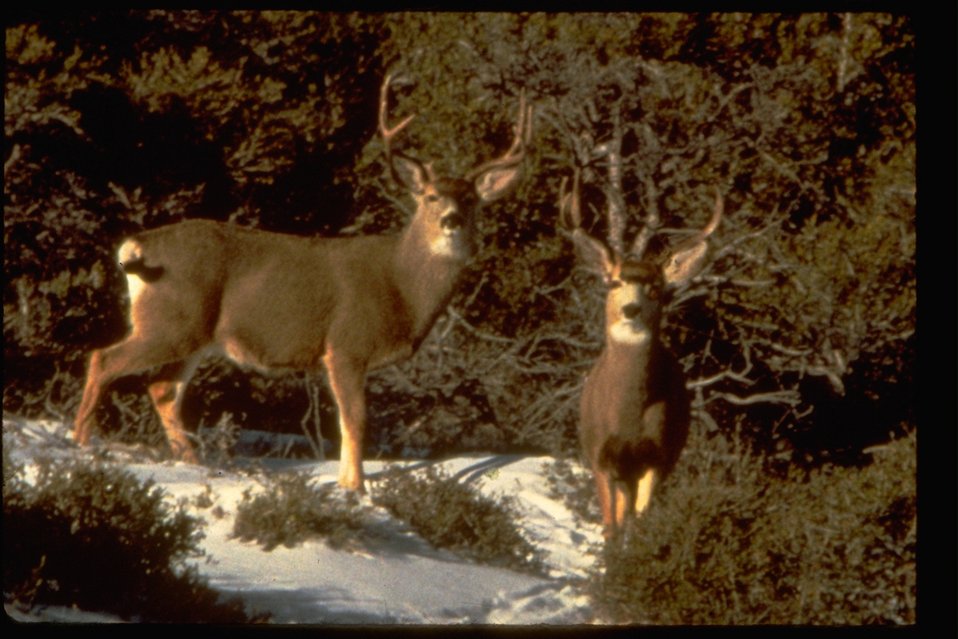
Two buck deer standing in the snow in a brushy area.